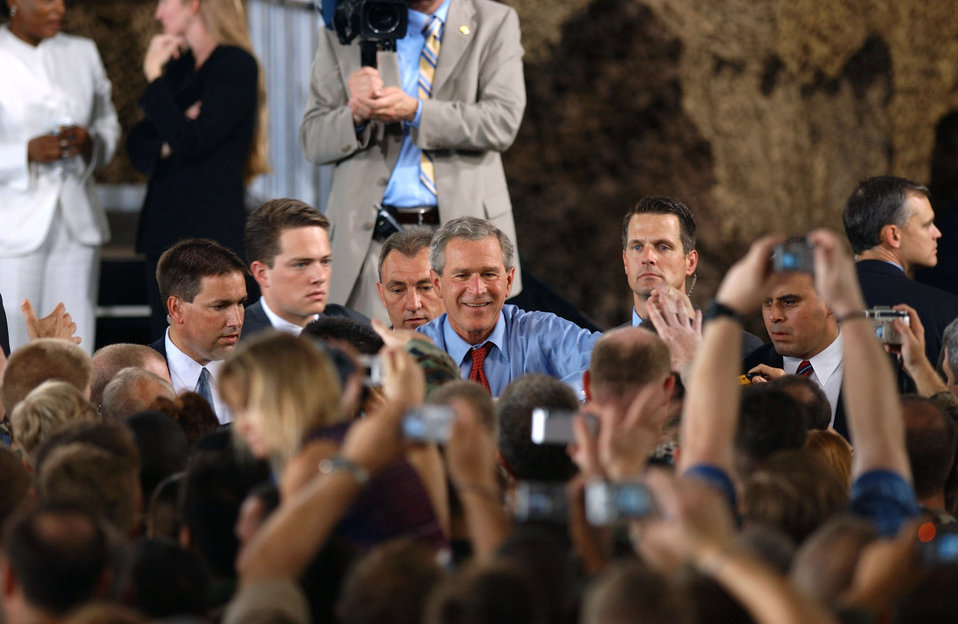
President Bush visits MacDill AFB

MACDILL AIR FORCE BASE, Fla. -- President George W. Bush shakes hand with servicemembers here June 16 following a speech that was broadcast live to servicemembers worldwide. The president said with the transfer of sovereignty two weeks away, the future of a free Iraq is coming into view.